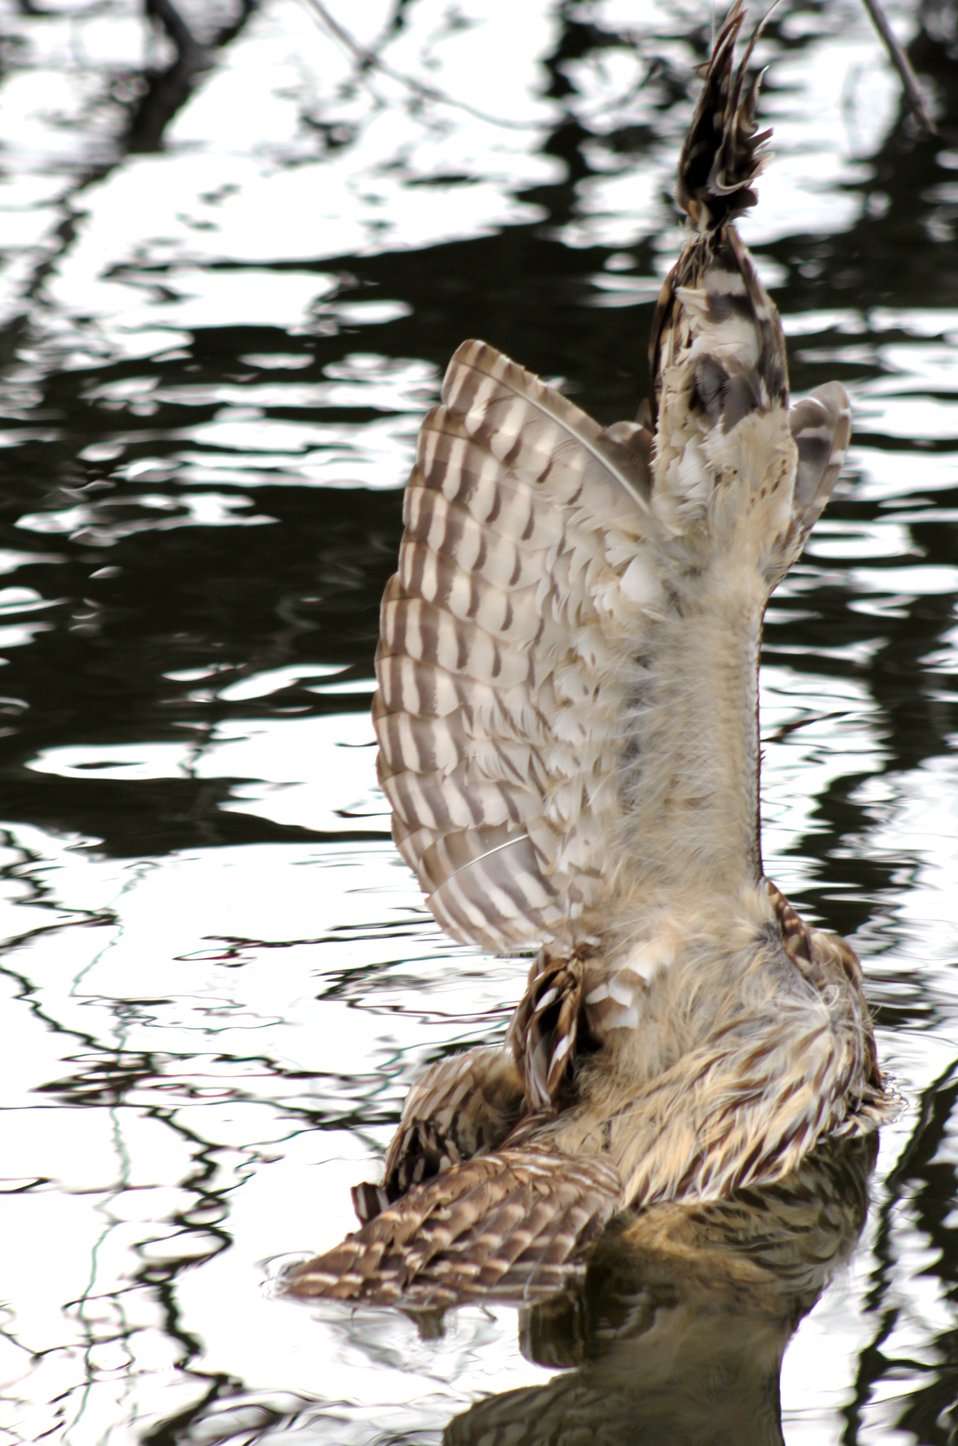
Barred Owl with Fishing Line

Why we need to dispose of fishing line responsibly.